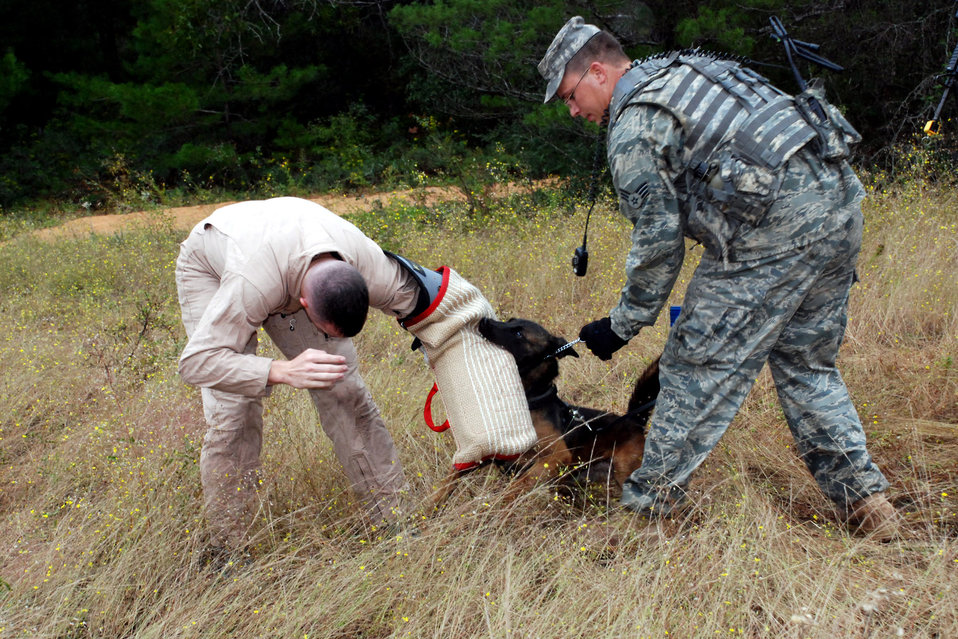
Brave Defender training goes to dogs

Senior Airman Eric Glass and his military working dog, Kim, apprehend a